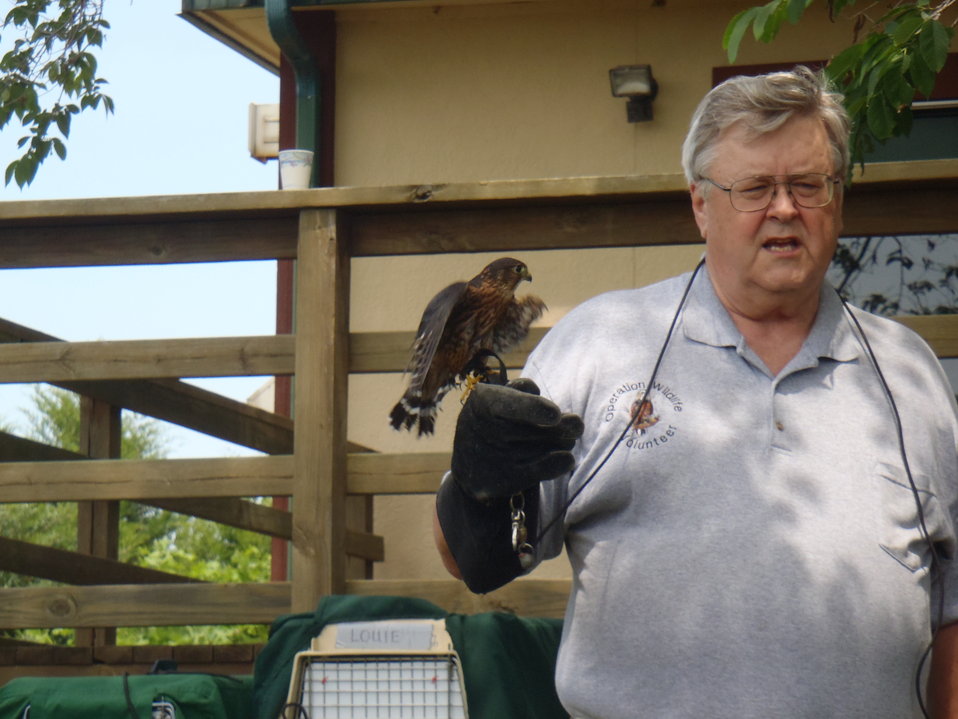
International Migratory Bird Day 2012

Marais des Cygnes National Wildlife Refuge with Operation Wildlife Presentation